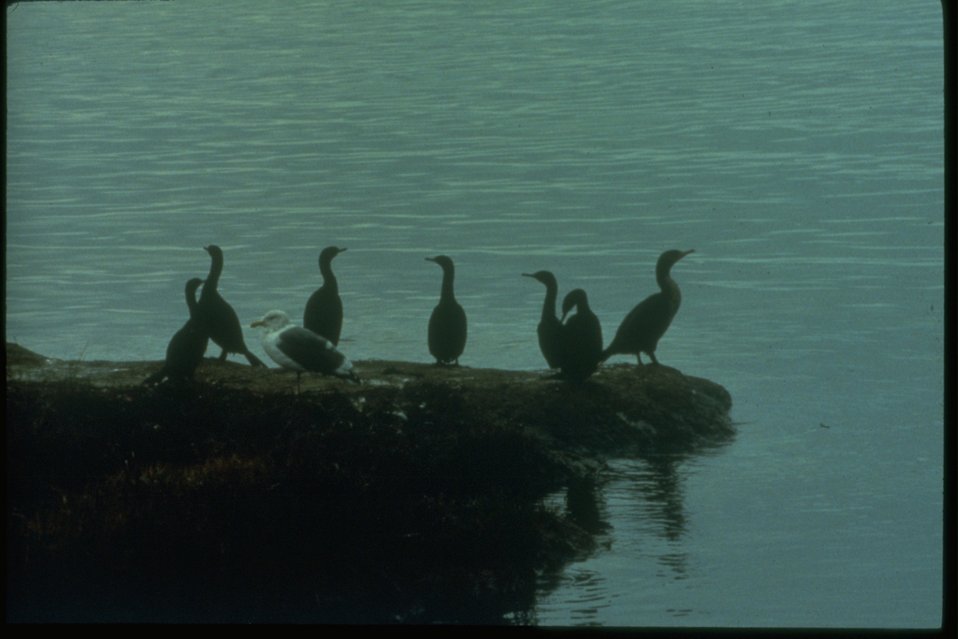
Cormorants at Yaquina Head ONA.